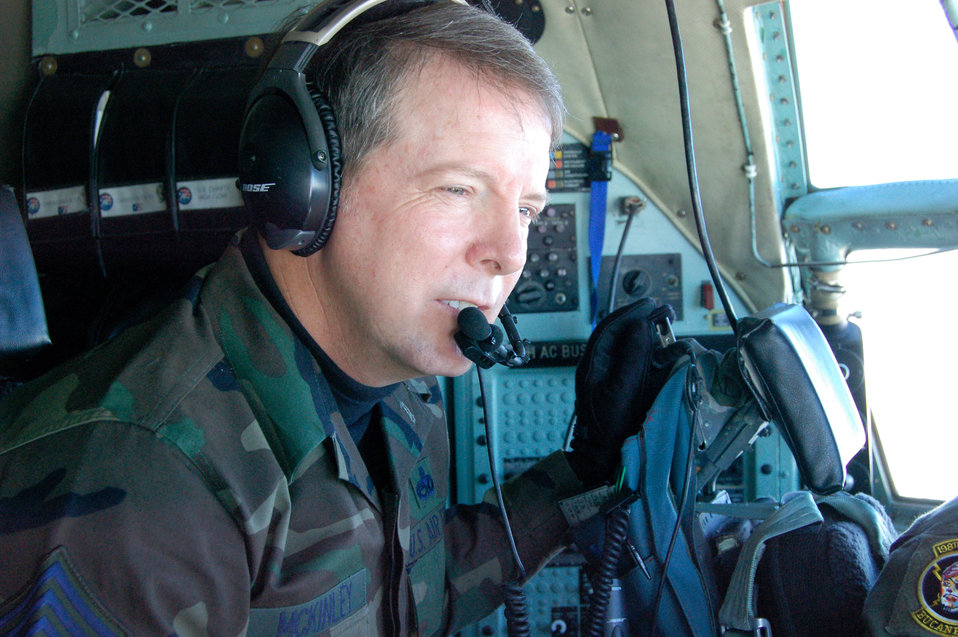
Chief McKinley visits Airmen at Soto Cano

Chief Master Sgt. of the Air Force Rodney J. McKinley checks out the landscape over Texas from a C-130 Hercules bound for Soto Cano Air Base, Honduras, Dec. 11. The chief was on the first leg of a four-base tour to visit Airmen in Central and South America and the Caribbean.